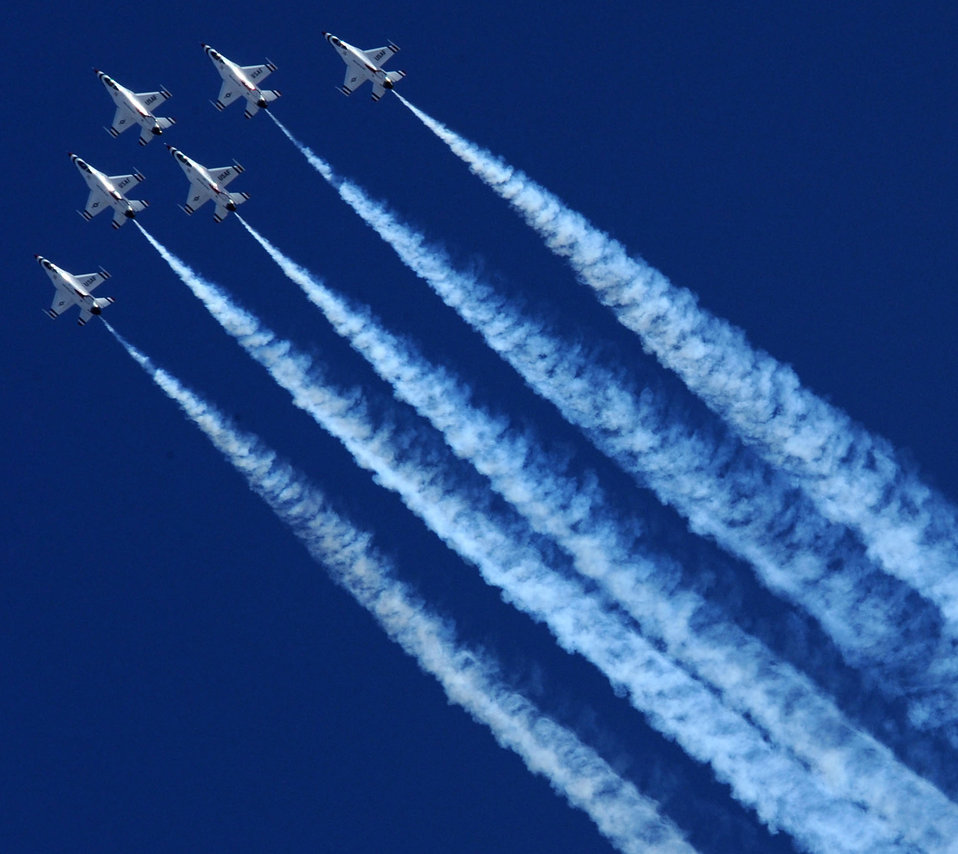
Streaks of precision

The United States Air Force Thunderbirds perform during the Aerospace and Arizona Days air show March 20, 2010, at Davis Monthan Air Force Base. This air show kicked off the team's 57th season.